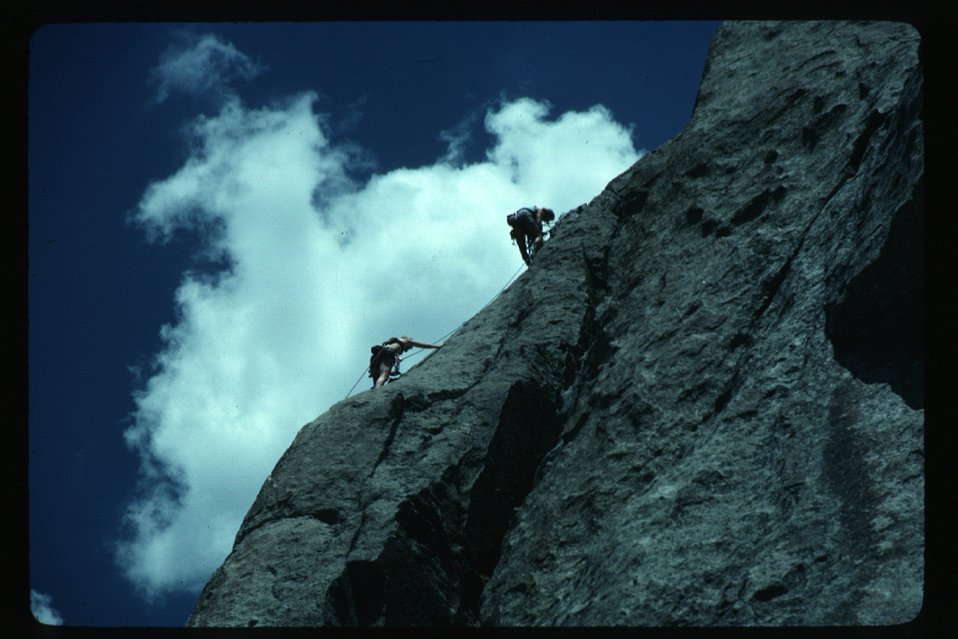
Rock climber Burley City of Rocks Burley Field Office USRD Upper Snake River District